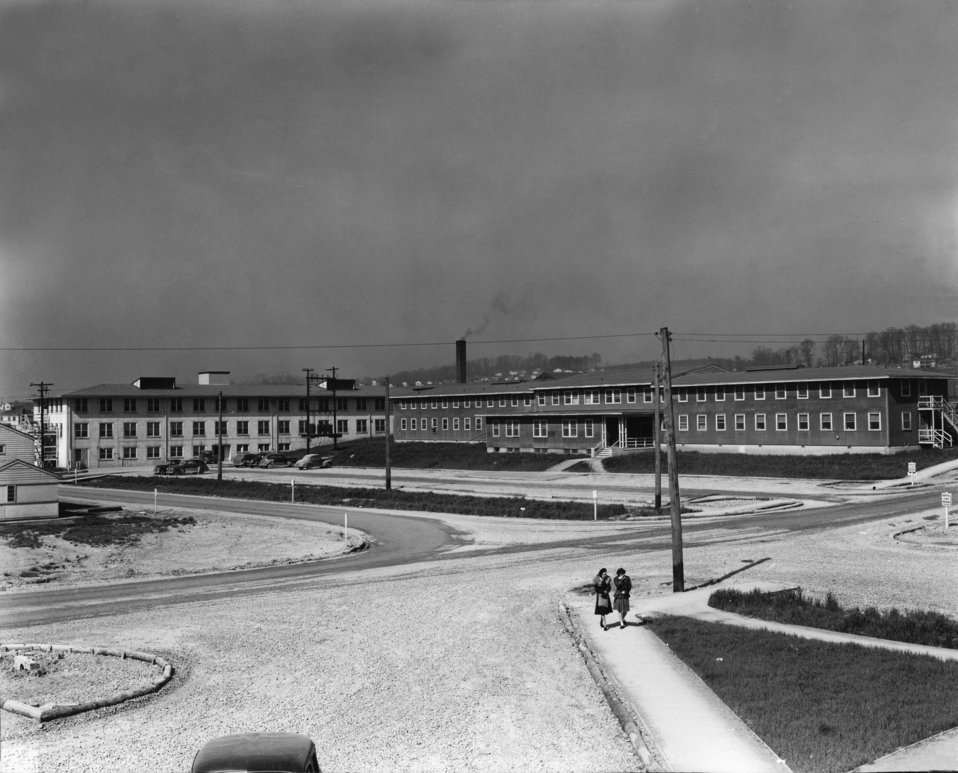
C.E.W. Hospital Oak Ridge

S-30 DOE photo by Ed Westcott 1944
Hospital, Looking N. from Turnpike
Oak Ridge Tennessee